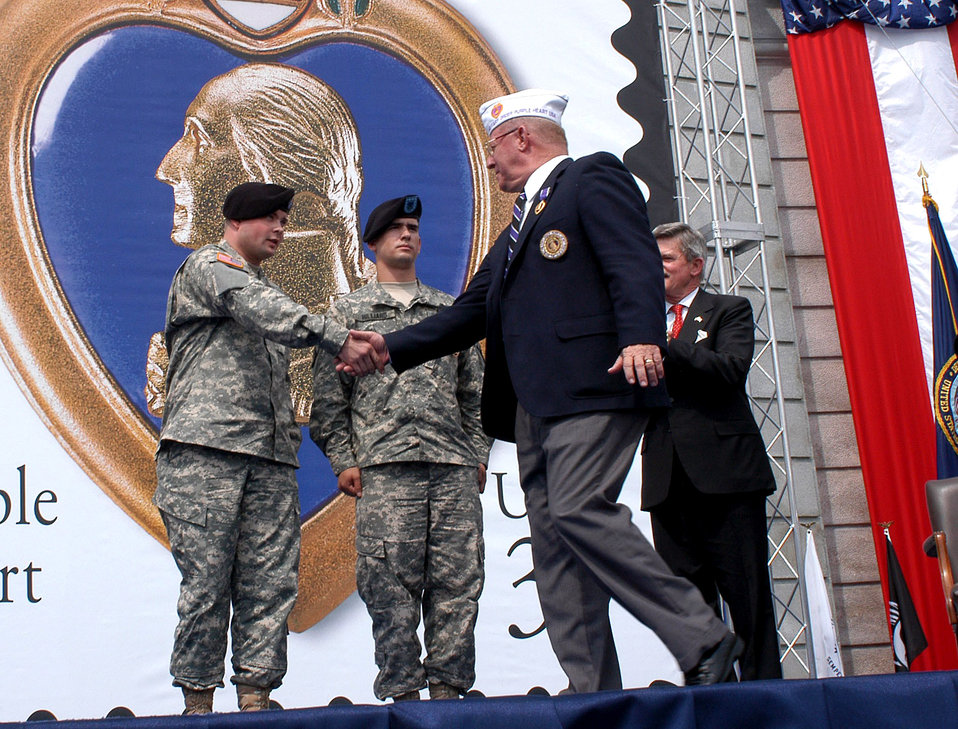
Postal Service reissues Purple Heart stamp

James Randles, national commander of the Military Order of the Purple Heart, congratulates Army Spc. Michael Hilliard and Army Spc. Ian Wagner after they received their Purple Hearts at Arlington National Cemetery on Friday, May 26, 2006. The presentation was part of the issuance ceremony for the new version of the Purple Heart definitive stamp.